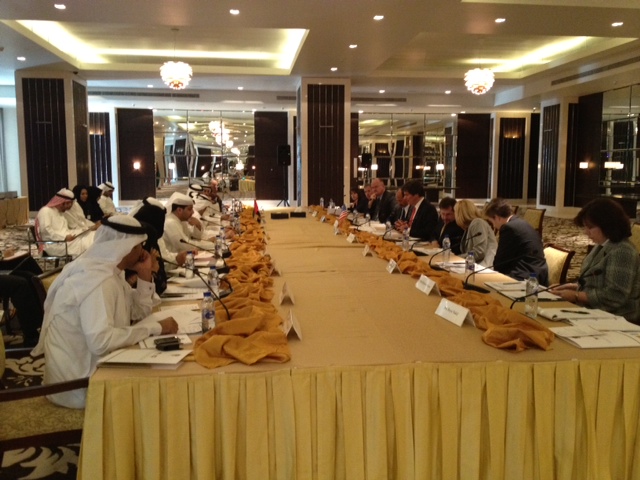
Assistant Secretary Fernandez Participates in the U.S.-UAE Economic Policy Dialogue

Assistant Secretary of State for Economic and Business Affairs Jose Fernandez participates in the first ever U.S.-United Arab Emirates (UAE) Economic Policy Dialogue in Abu Dhabi, UAE, on March 1, 2012.